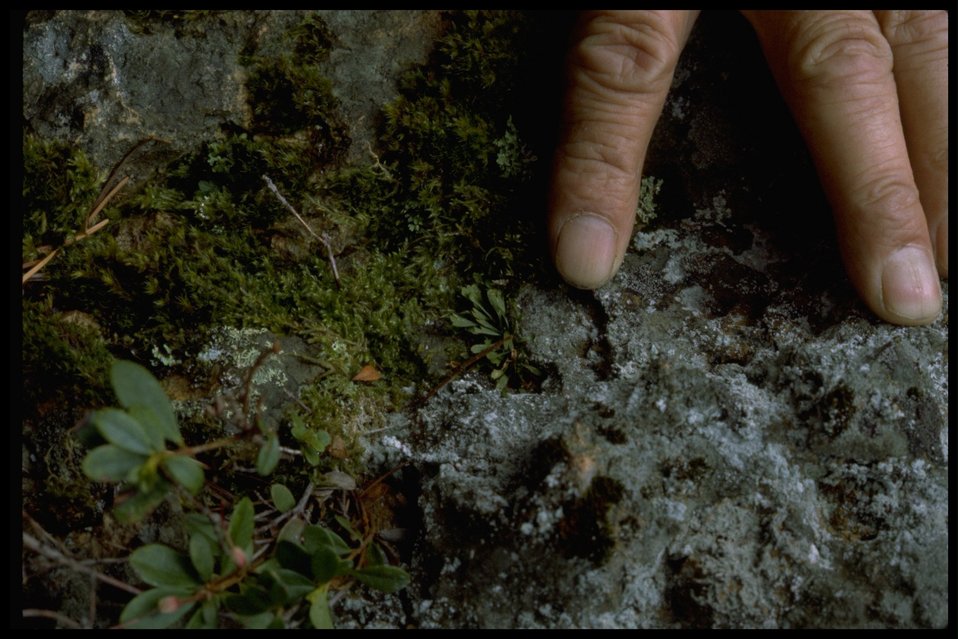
Asplenium septentrionale, commonly known as the Grass Fern.